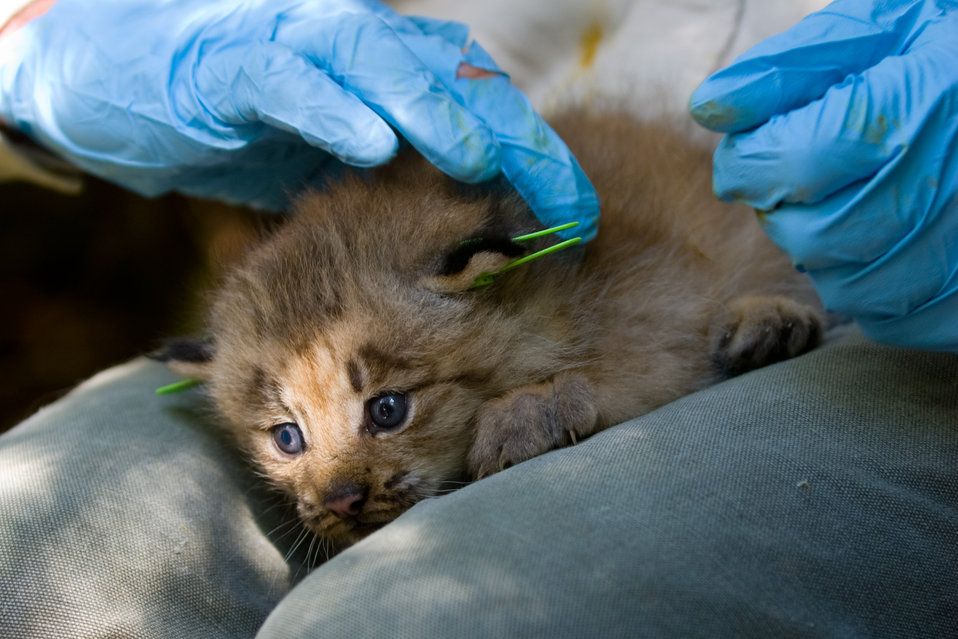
Canada Lynx Kitten

A wildlife biologist sets an ear tag in place.